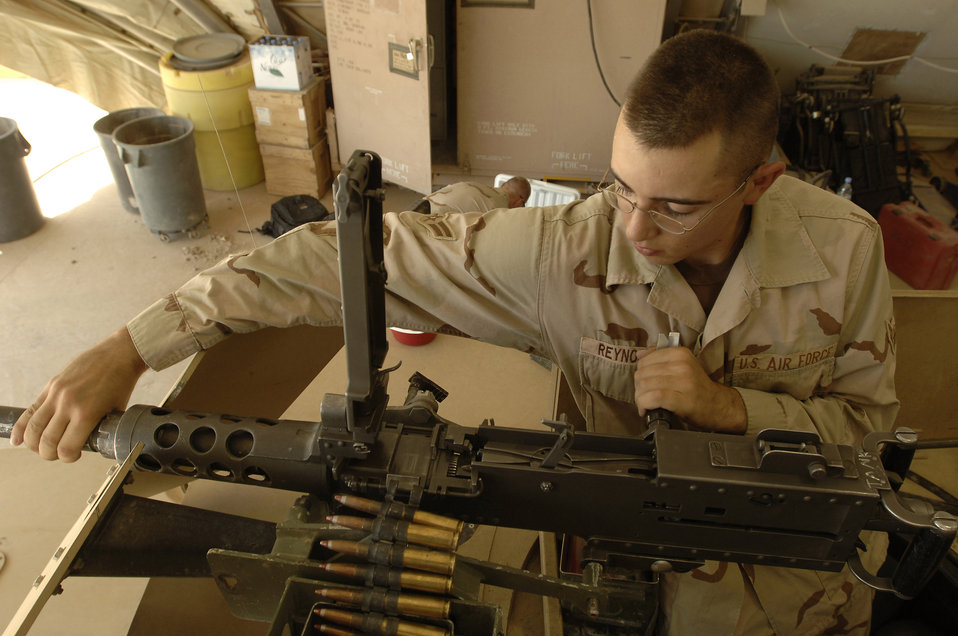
Big gun

BALAD AIR BASE, Iraq -- Airman 1st Class Matthew Reynolds prepares a .50 caliber machine gun for a convoy recently. Detachment 2 is responsible for protecting convoys across Iraq. Airman Reynolds is assigned to Detachment 2, 732nd Expeditionary Logistics Readiness Squadron, and is deployed from the 377th Logistics Readiness Squadron, Kirtland Air Force Base, N.M.